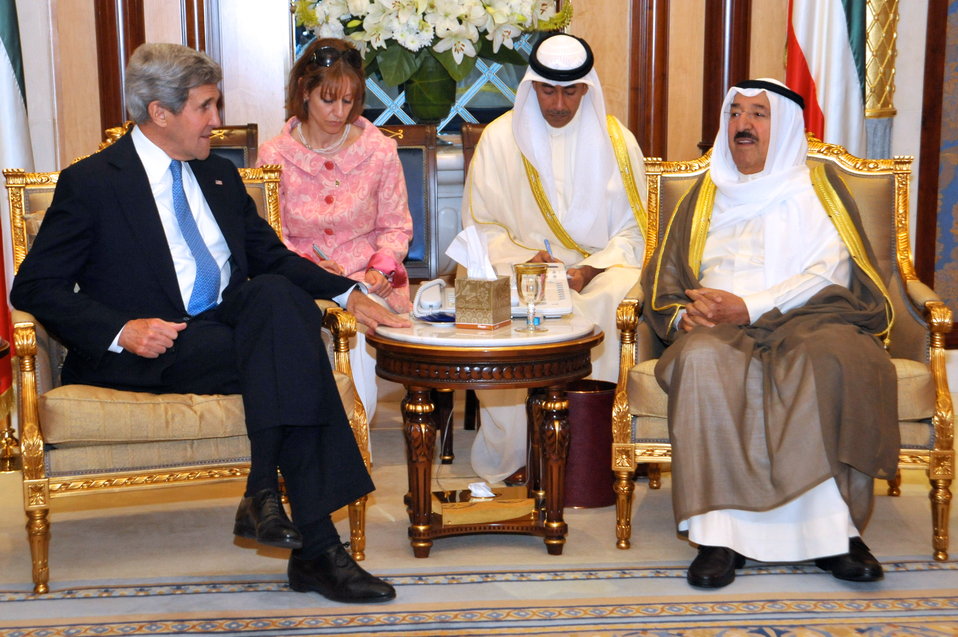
Secretary Kerry Meets With the Amir of Kuwait

U.S. Secretary of State John Kerry meets with Kuwaiti Amir Sheikh Sabah Al-Ahmed Al-Sabah during a visit to Kuwait City, Kuwait, on June 26, 2013.